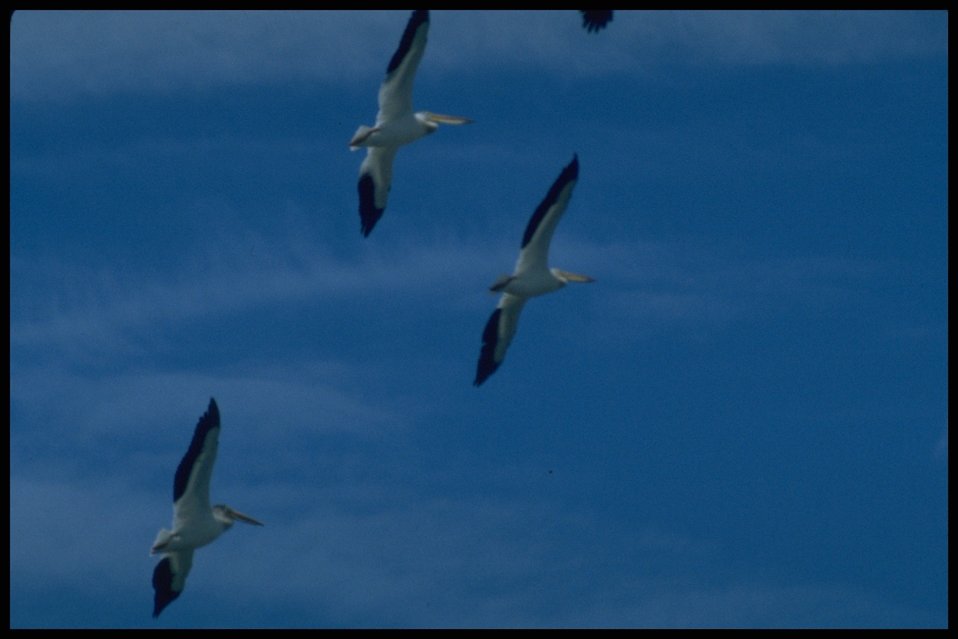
Pelicans in flight, Lakeview District.